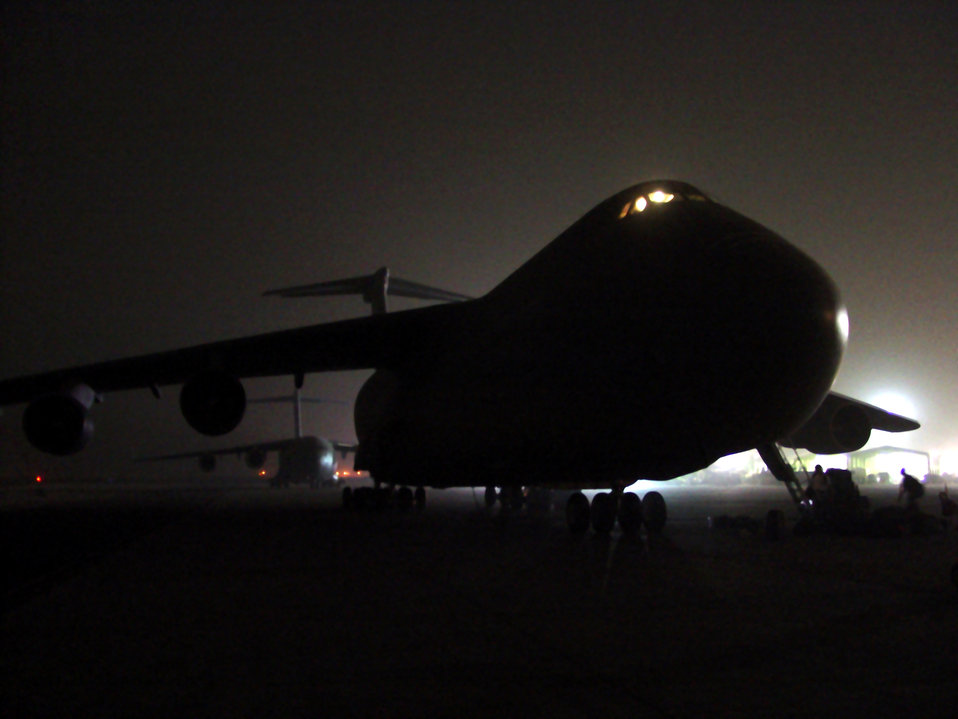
Waiting for daylight

BAGHDAD, Iraq -- A C-5 Galaxy from Dover Air Force Base, Del., sits on the ramp at Baghdad International Airport. The aircraft, which carries more cargo than any other in the Department of Defense, is in Baghdad to support Operation Iraqi Freedom.